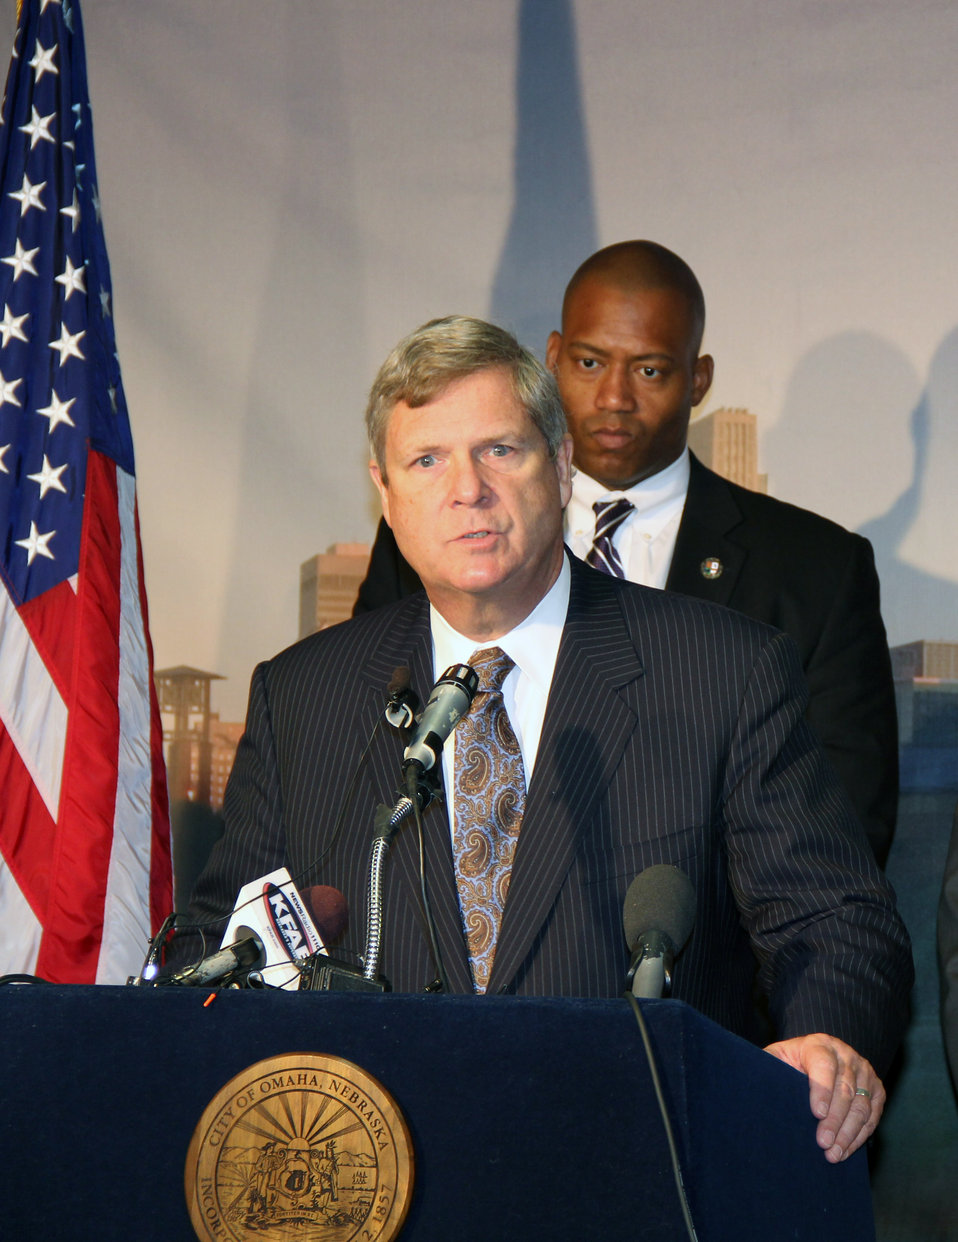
Agriculture Secretary Tom Vilsack speaks at the opening session of a Federal Drought Workshop in Omaha, NE on Tuesday, Oct. 9, 2012. This was the first of four regional workshops to outline resources available to assist with drought recovery effort. Secretary Vilsack indicated that President Obama had directed federal agencies to take every possible step to help farmers and ranchers, businesses, and rural communities recover as a result of one of the country's worst droughts in decades. The U.S. Department of Agriculture (USDA) is partnering with local, state and federal partners to hold the workshops, working closely with the Department of Commerce, the Small Business Administration and the Federal Emergency Management Agency to facilitate these meetings.